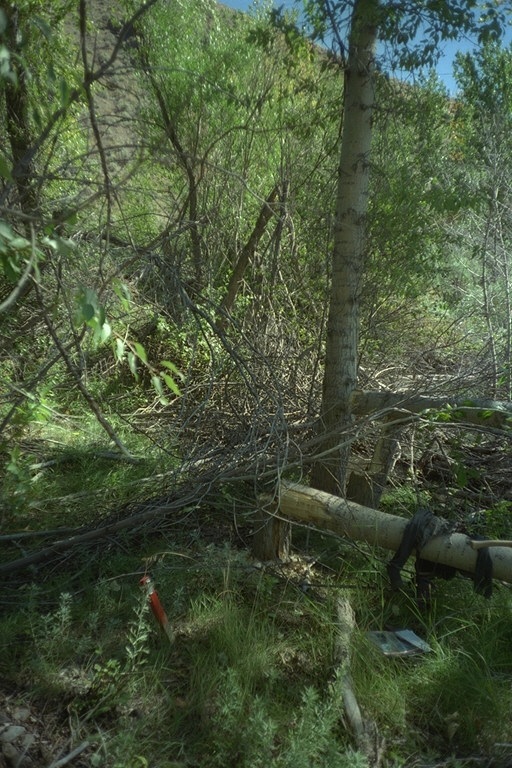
Riparian area Public Lands Salmon Field Office UCSC Upper Columbia Salmon Clearwater District